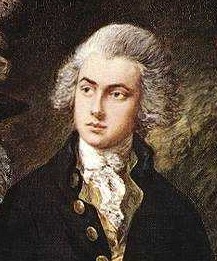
205 gainsb morningwalk